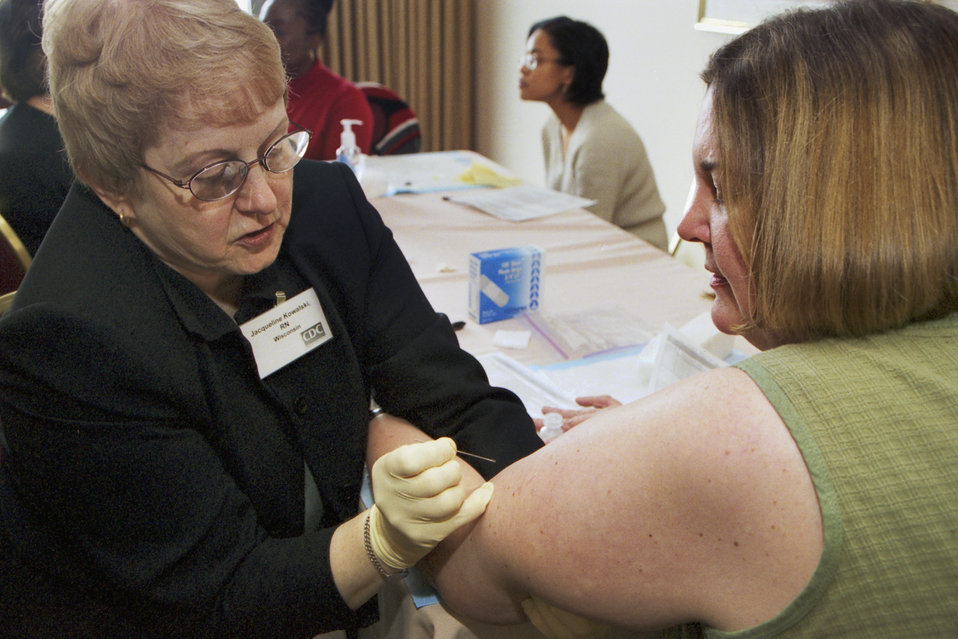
Jacqueline Kowalski (Left) and Lorna Will practice proper technique with a bifurcated needle used during smallpox vaccination.